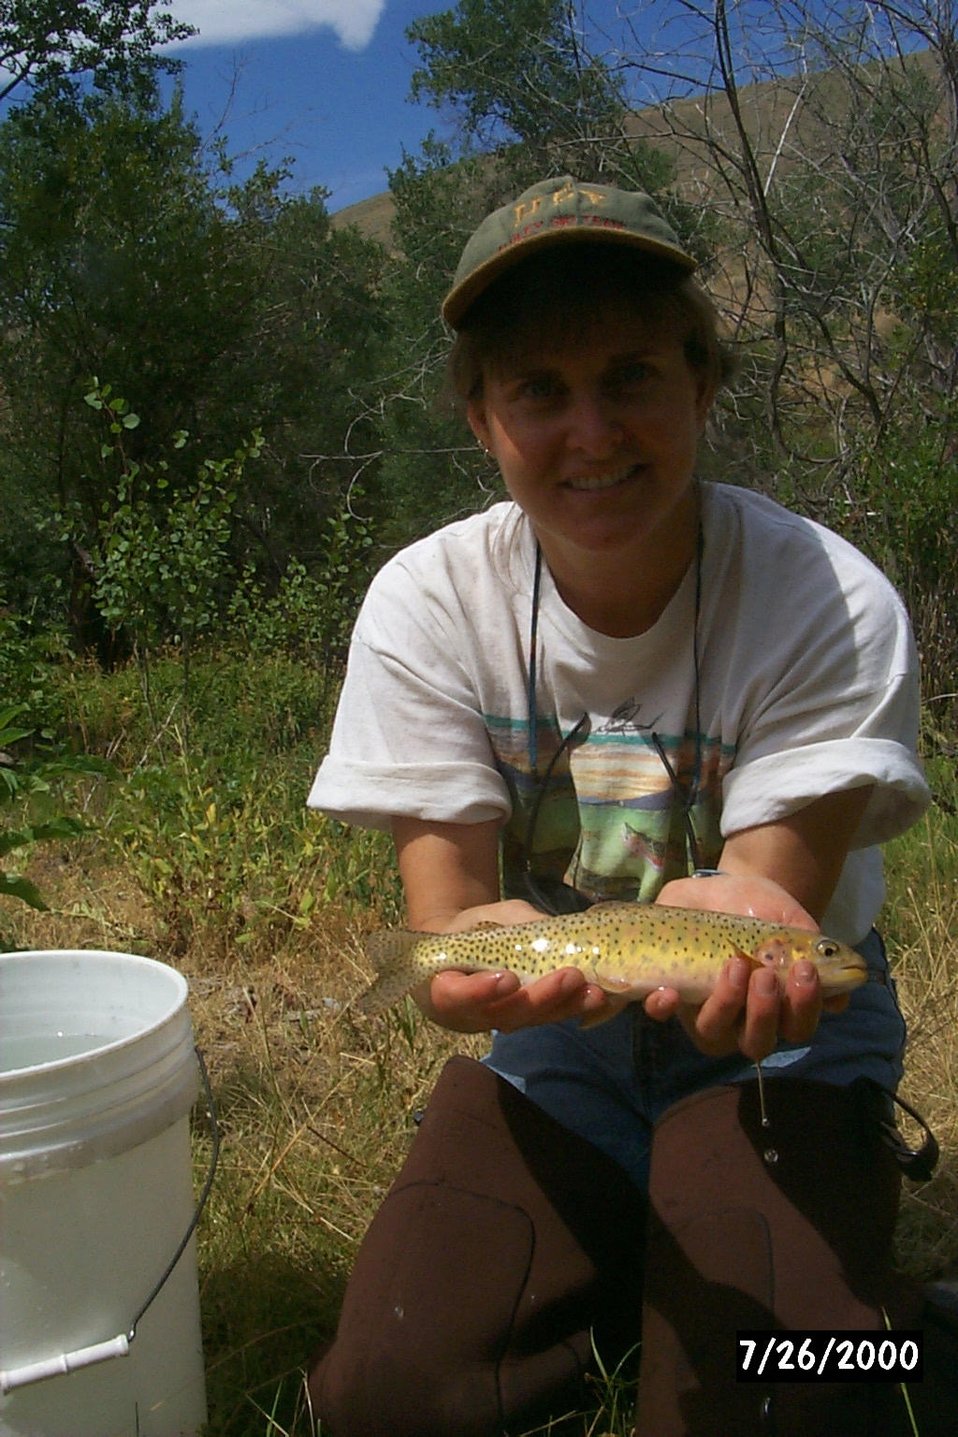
People Salmon Field Office UCSC Upper Columbia Salmon Clearwater District